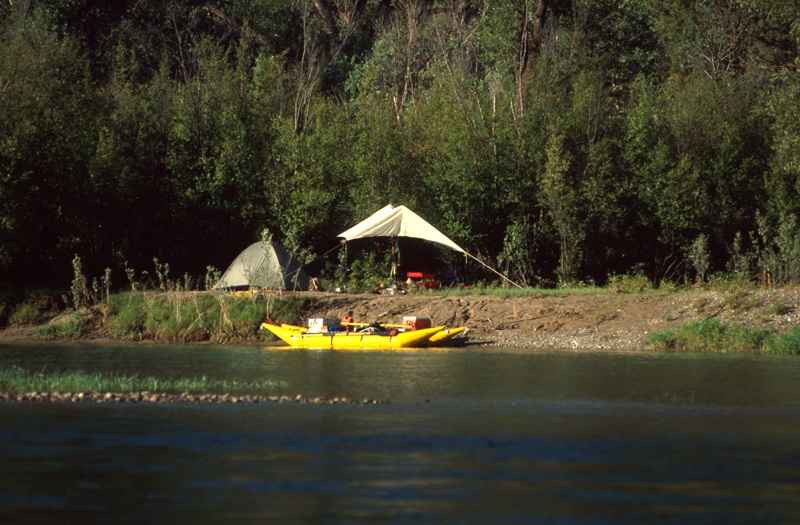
South Fork of the Snake River